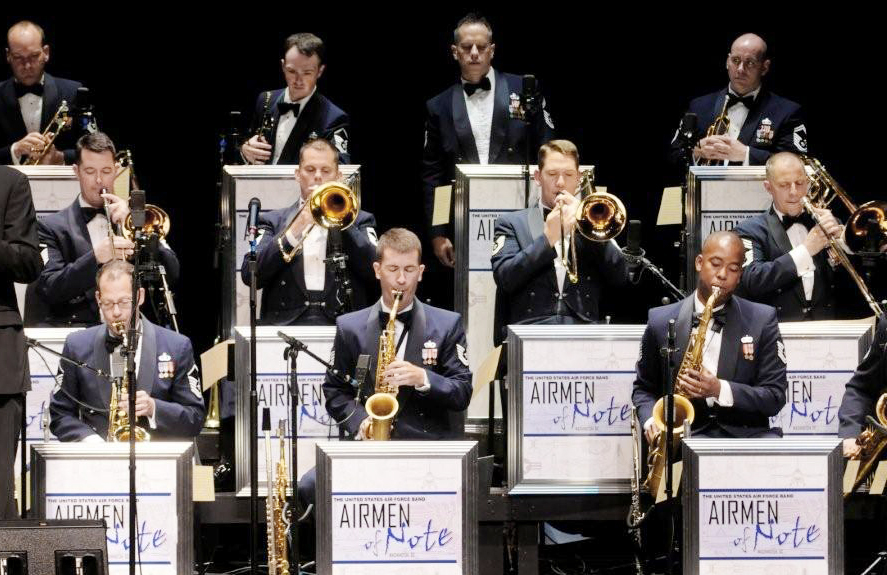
Airmen of Note

The Airmen of Note's self-released holiday album